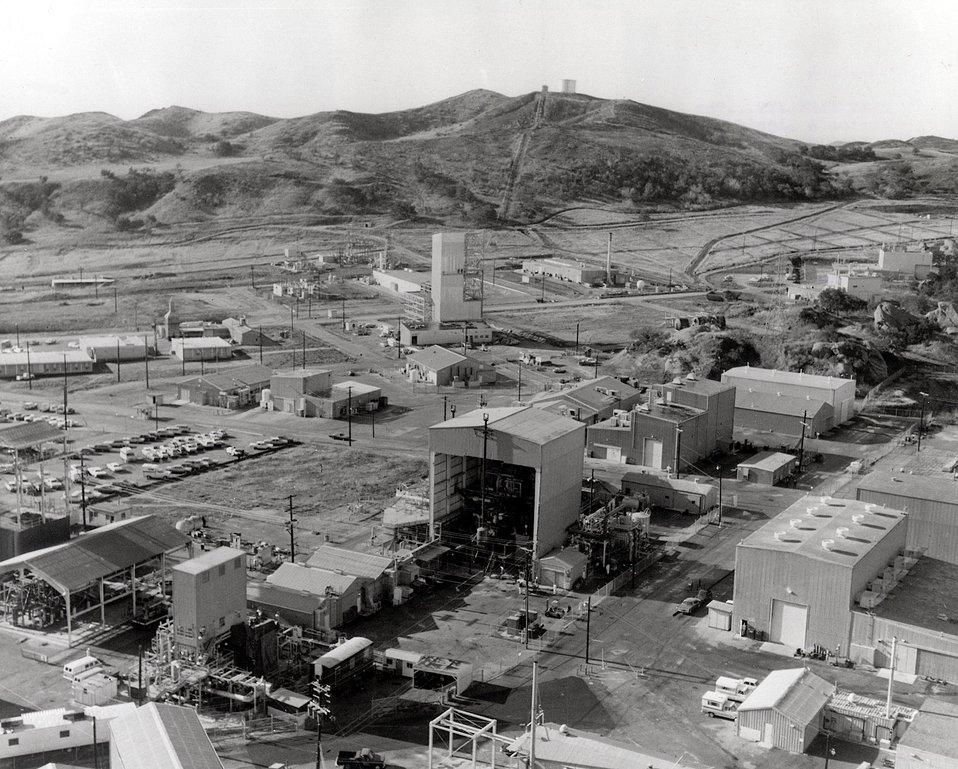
The Atomic Energy Commission's Liquid Metal Engineering Center is a major national facility for the high priority liquid metal fast breeder reactor program. Circa 1973.